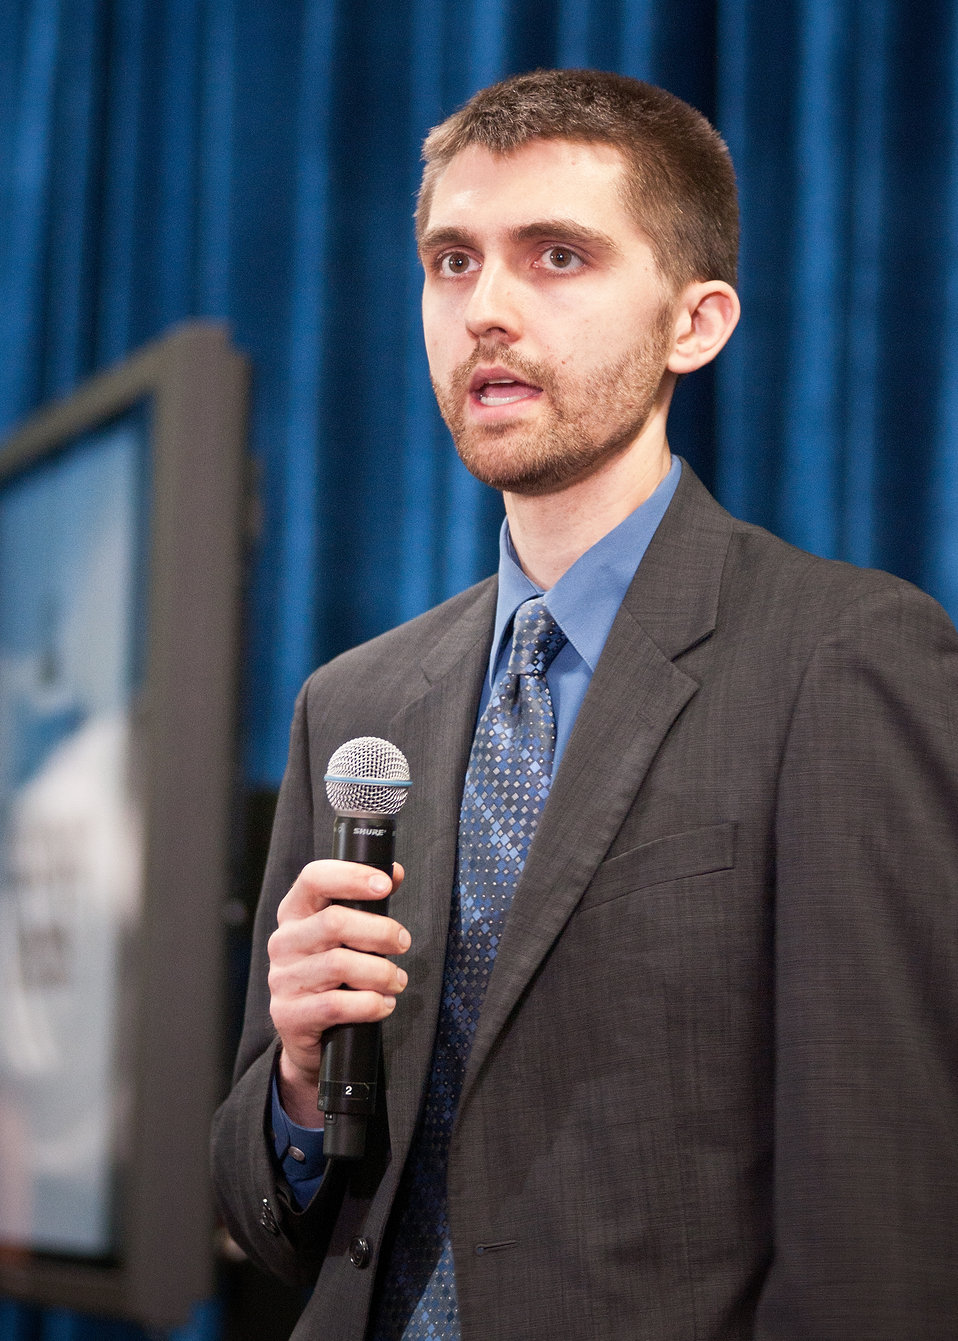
Director of the U. S. Department of Agriculture (USDA) Administrative Solutions Project Chris Nelson introduces Agriculture Secretary Tom Vilsack during the Ask The Secretary event held in the South Building Cafeteria, in Washington, D.C., on Wednesday, March 21, 2012, The Blueprint for Stronger Service Initiative aims to build a modern and efficient service organization that is closely timed with technological innovations - and better suited to respond to 21st century agricultural challenges.